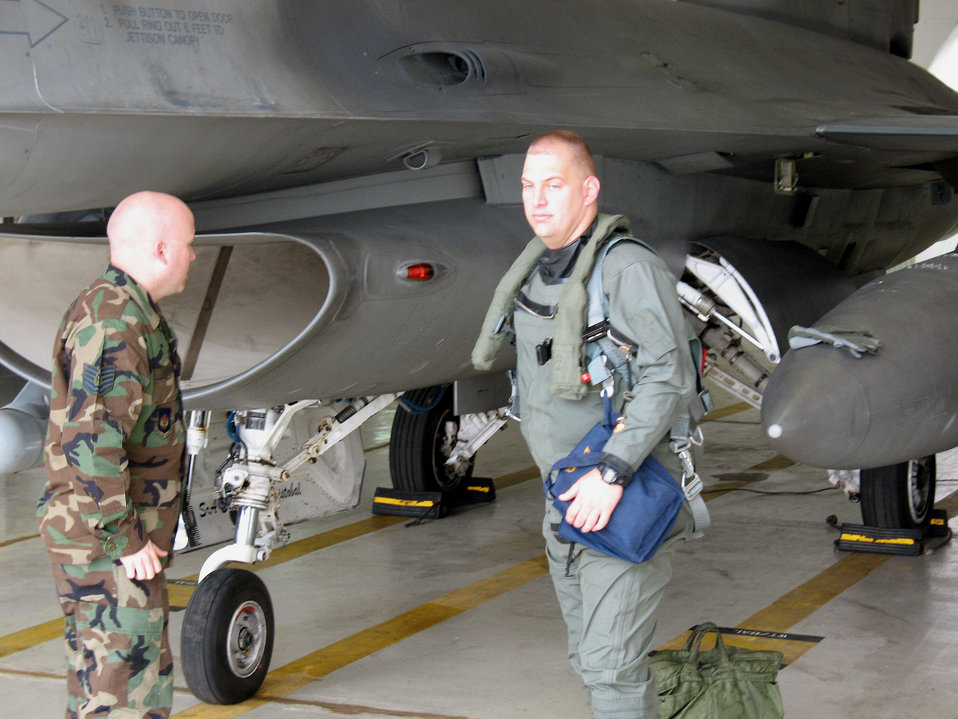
Rotational squadron deployment jets leave Incirlik

Tech. Sgt. Bret Barlow, an F-16 Fighting Falcon crew chief at the 52nd Fighter Wing at Spangdahlem Air Base, Germany, performs pre-flight checks as Maj. James Gump, an F-16 pilot and the weapons and tactics officer for the 39th Operations Squadron at Incirlik Air Base, Turkey, prepares to climb in the aircraft. Major Gump flew the fighter back to its home station at Spangdahlem.